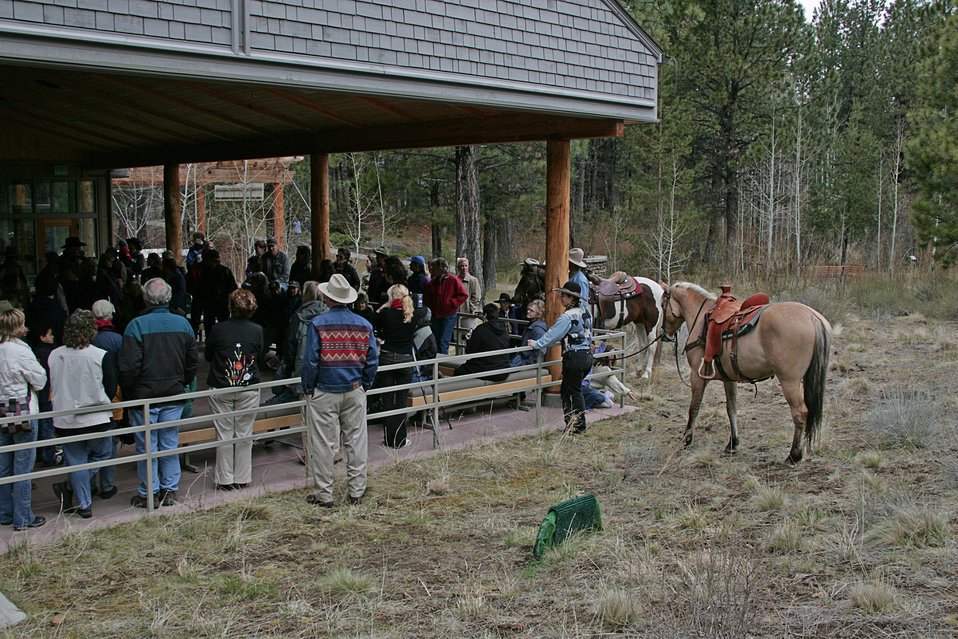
Wild Horse Adoption Auction Sale at High Desert Museum brought $5000 for Spirit and $3000 for Sage, both wild horses from eastern Oregon.